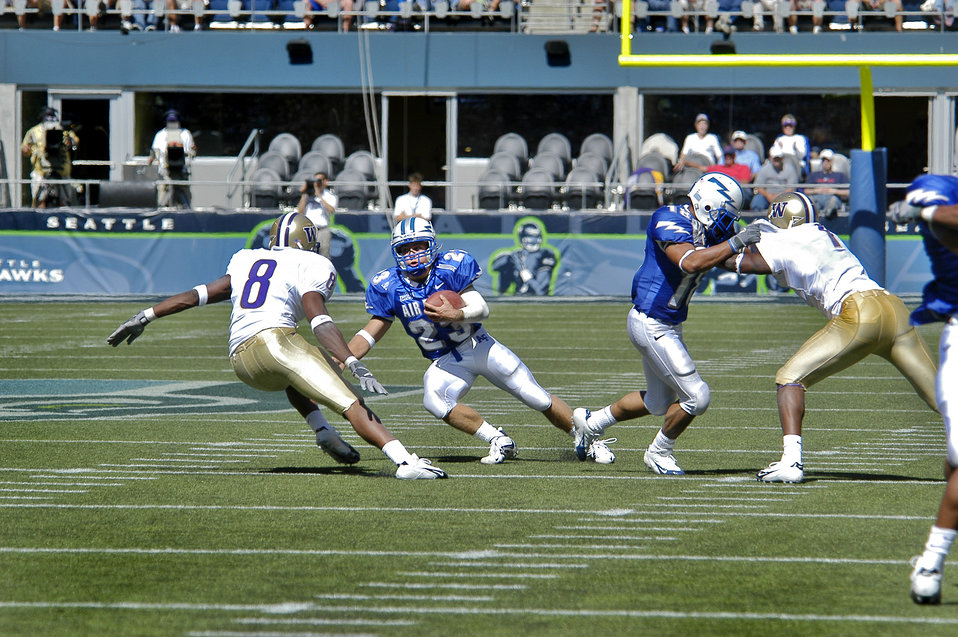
Falcons win opener

SEATTLE -- Air Force Academy Falcon halfback Chad Hall eyes University of Washington free safety Dashon Goldson in the open field as Air Force's Justin Handley blocks a defender. The Cadets defeated the Huskies in the season opener for both teams, 20-17.